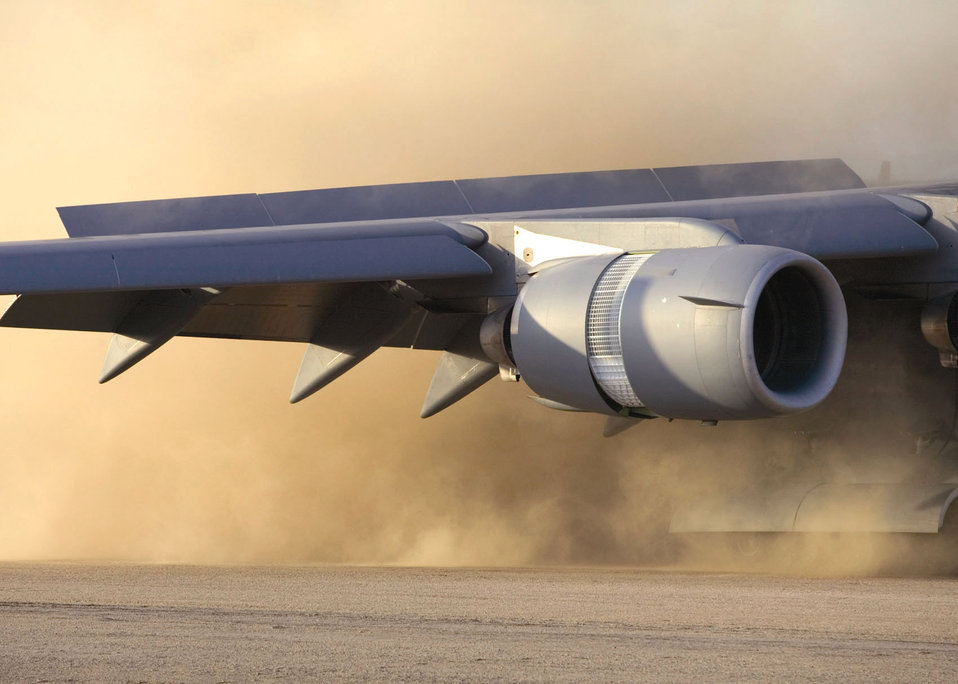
Dirt runway testing increases C-17 safety, agility

Dust envelopes the rear of a C-17 Globemaster III upon landing at Fort Hunter Liggett, Calif. The C-17 was performing take-off and landing testing on semi-prepared runways as part of a test to expand the C-17 capabilities to land on dry and wet-dirt runways.